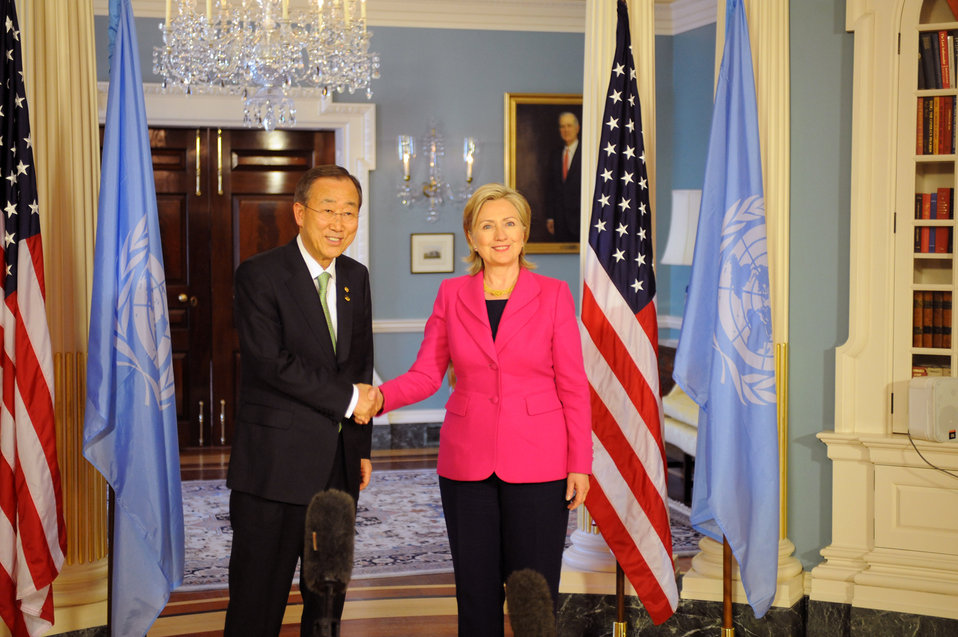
Secretary Clinton Meets with UN Secretary General

U.S. Secretary of State Hillary Rodham Clinton conducts a bilateral meeting with UN Secretary-General Ban Ki-moon in the Treaty Room of the U.S. Department of State in Washington, DC April 12, 2010.